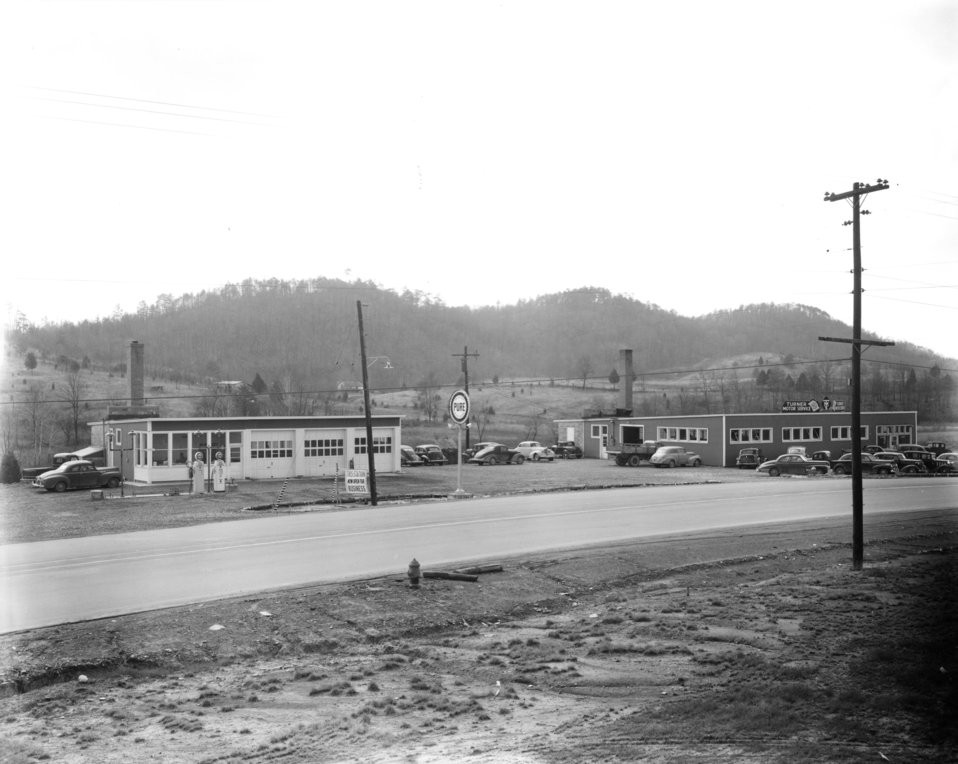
Business activity at Oak Ridge